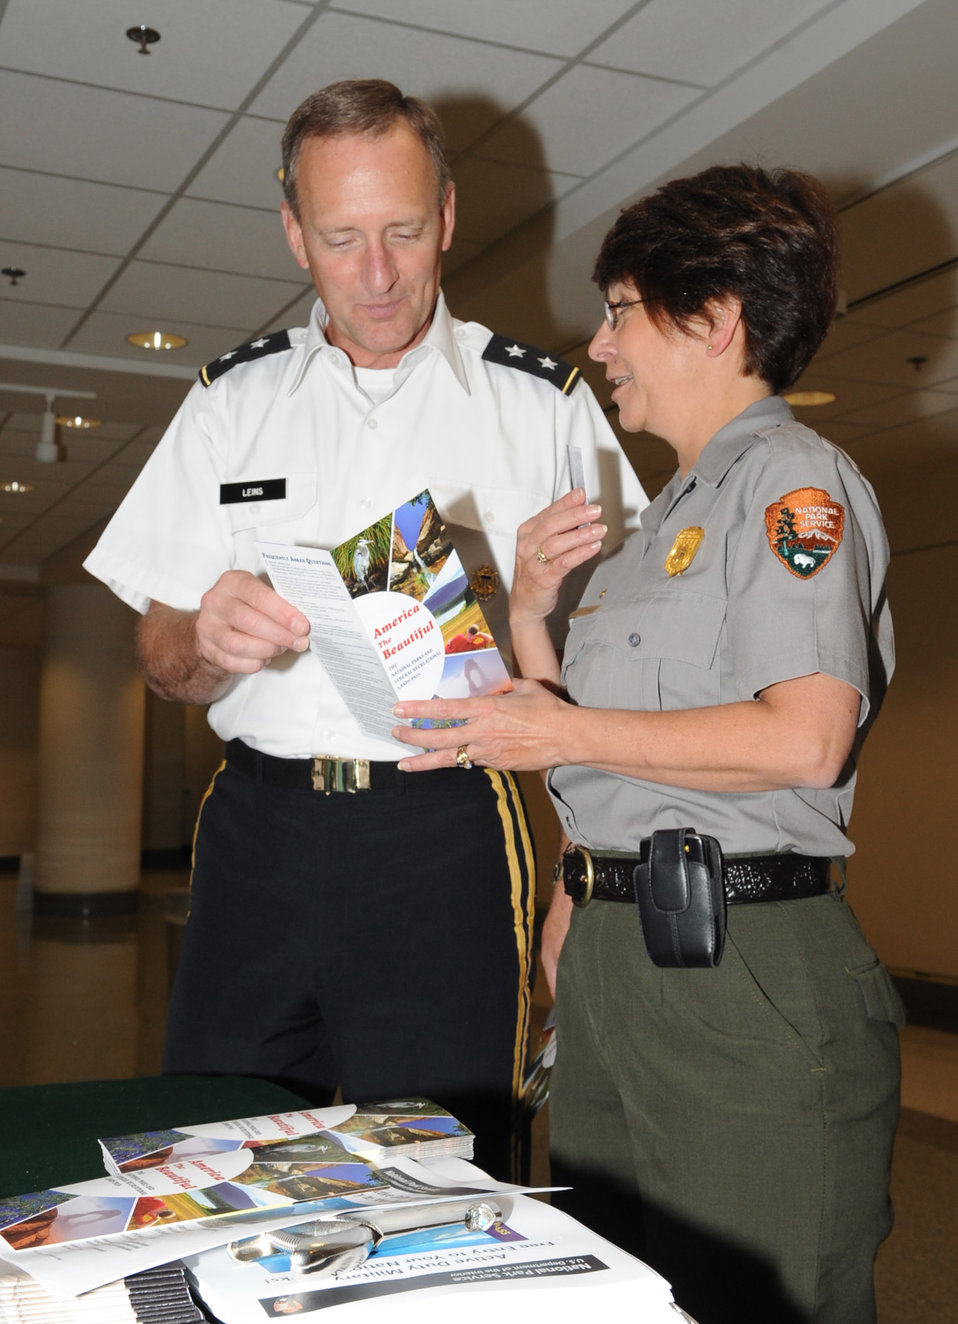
Reserve officer recalls journey to freedom

Col. Josie Fernandez, right, explains the National Parks and Federal Recreation Lands Pass campaign to Army Maj. Gen. Christopher Leins at the Pentagon on June 26, 2012.